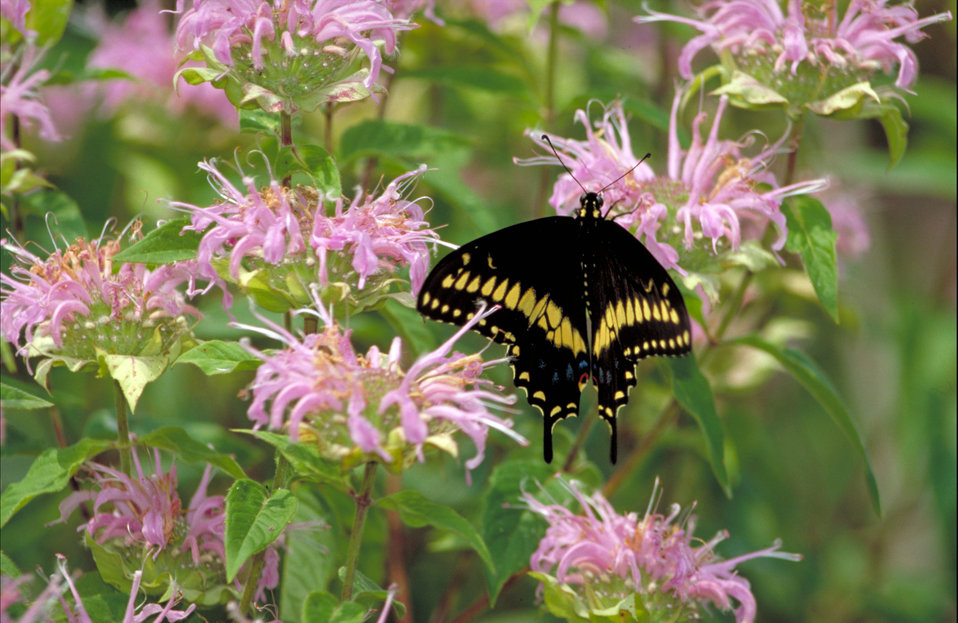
Black swallowtail

Also called Spicebush swallowtail; Black butterfly with small blue spots and yellow stripes, sitting on blossom with wings open.